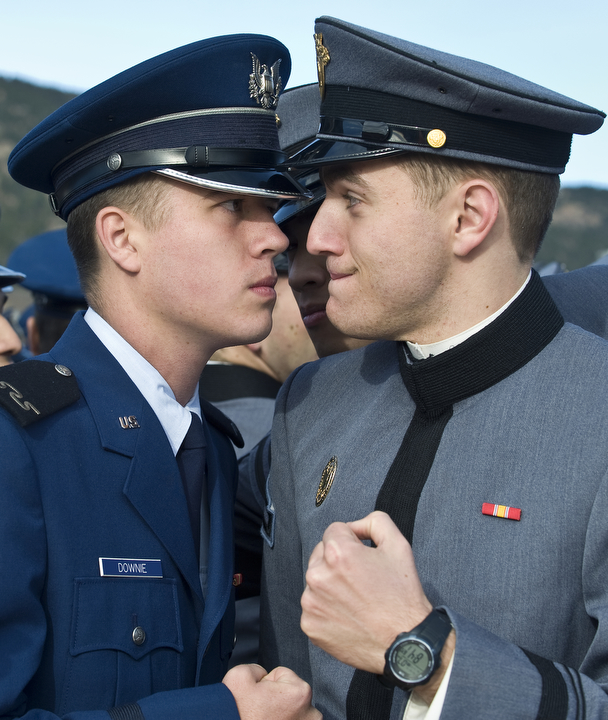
ESPN films

U.S. Air Force Academy Cadet Jeffrey Downie and U.S. Military Academy Cadet Chuck Nadd square off over who will win the Air Force vs. Army football game during ESPN's